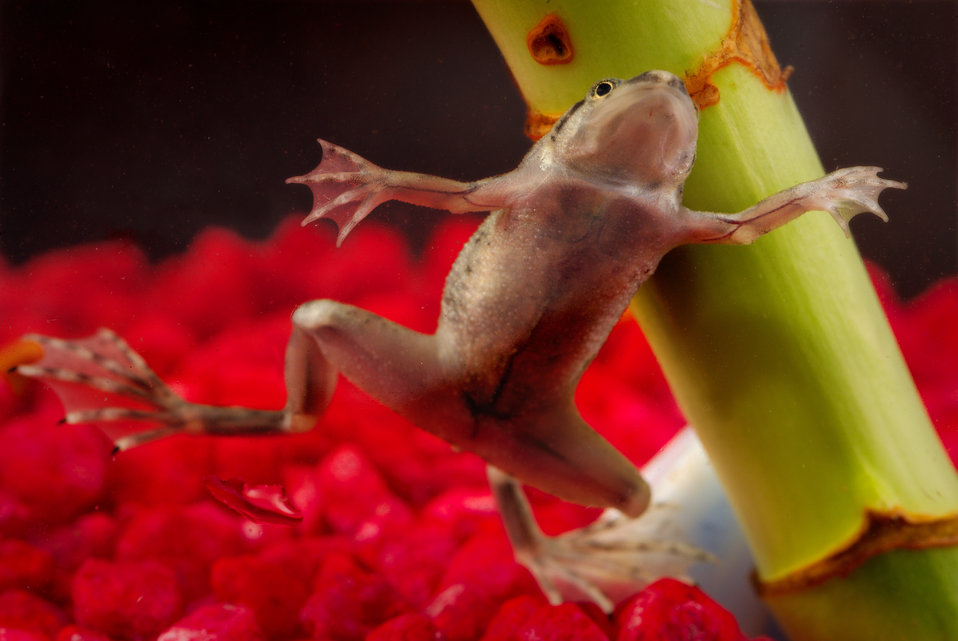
This photograph depicts an African dwarf frog, Hymenochirus boettgeri.